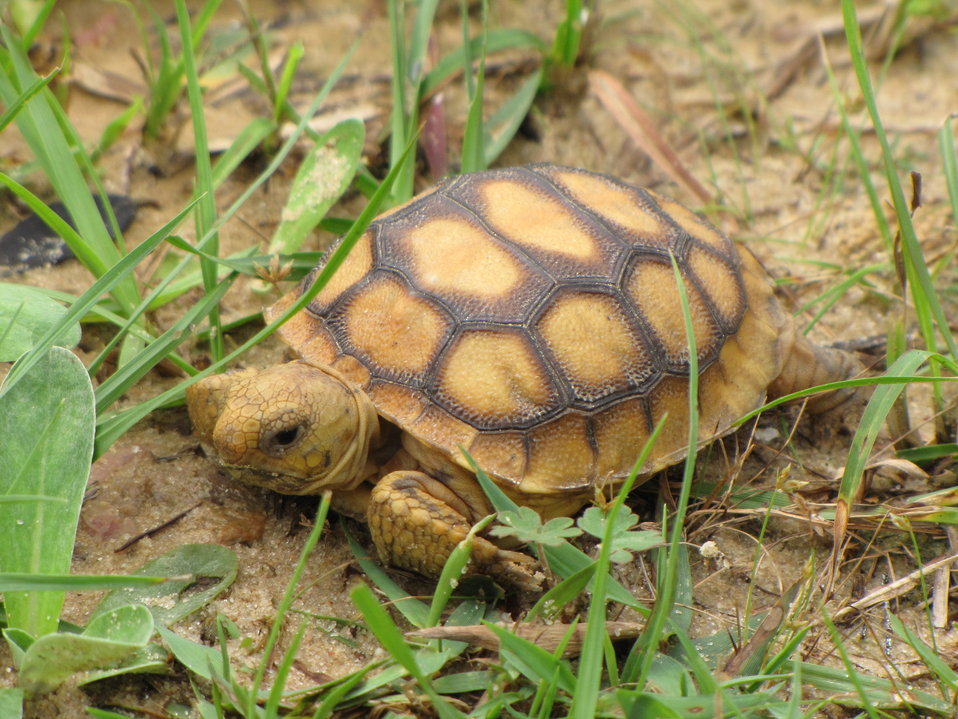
Baby gopher tortoise

This baby gopher tortoise is walking through grasses found in the longleaf ecosystem.